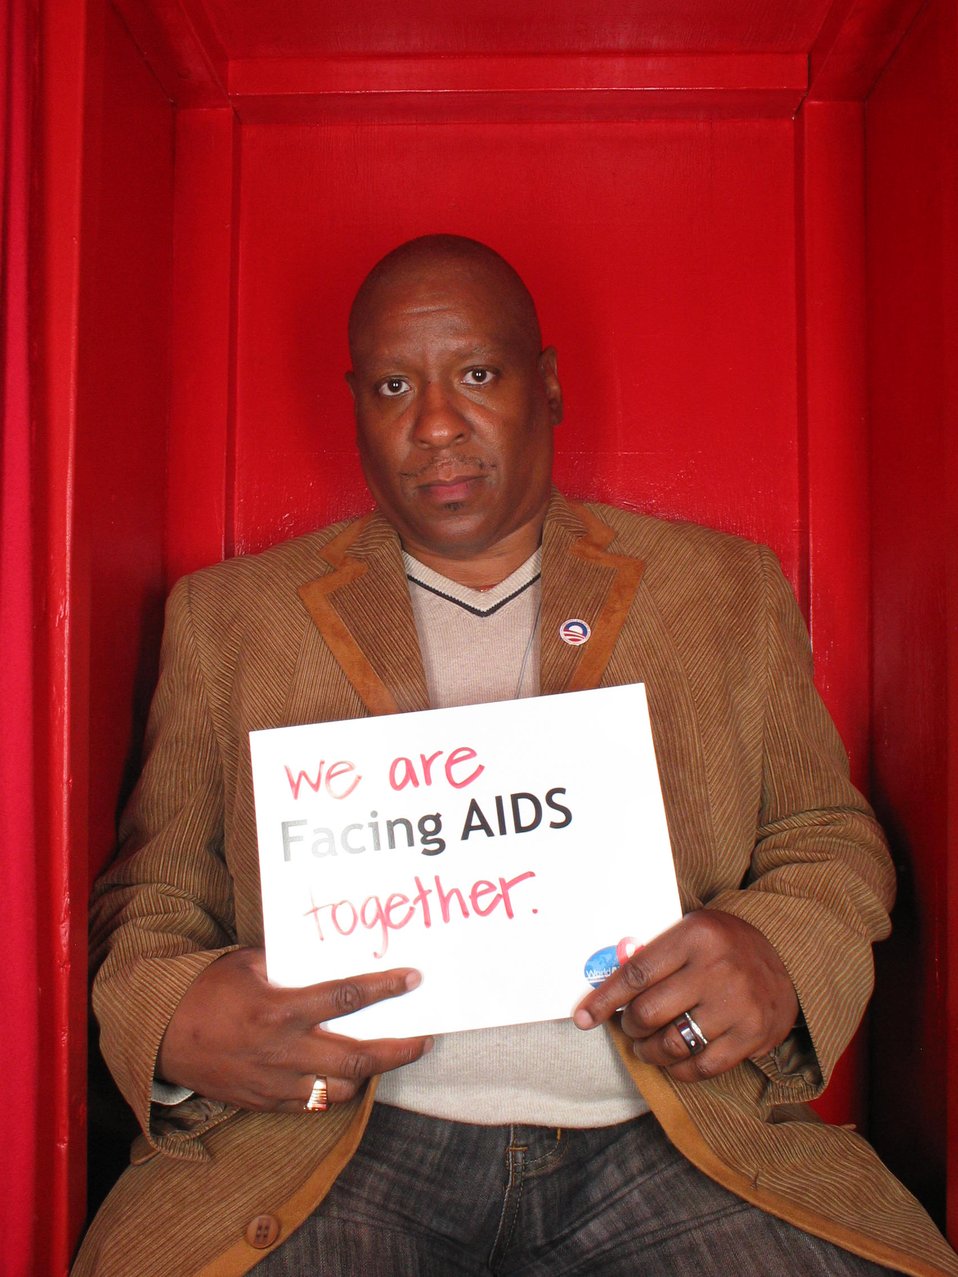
We are Facing AIDS together